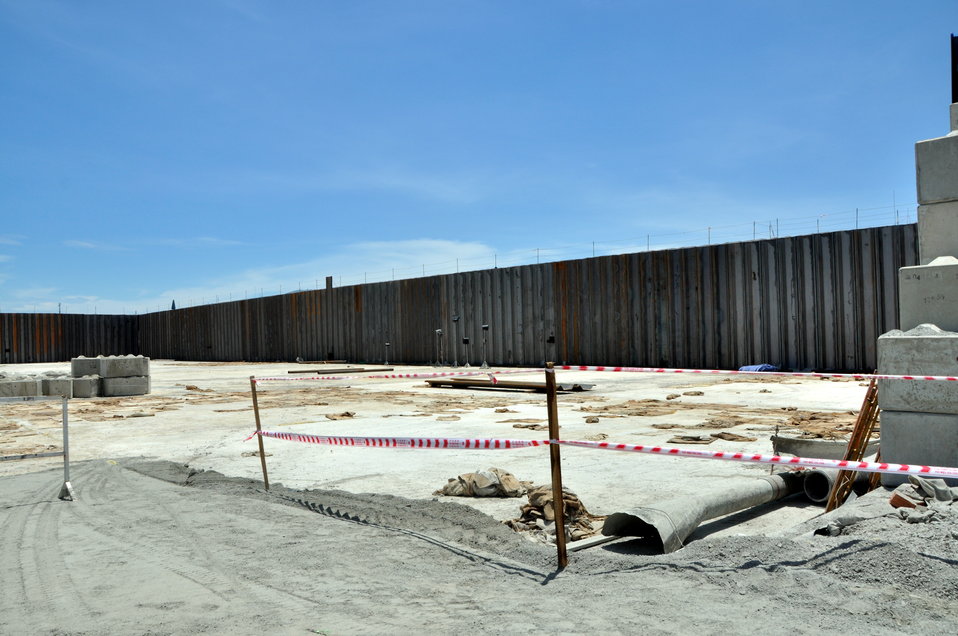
Environmental Remediation Progress at the Danang Airport site

Progress at the Remediation of Dioxin Contamination Project Site

Danang, Vietnam, June 5, 2013